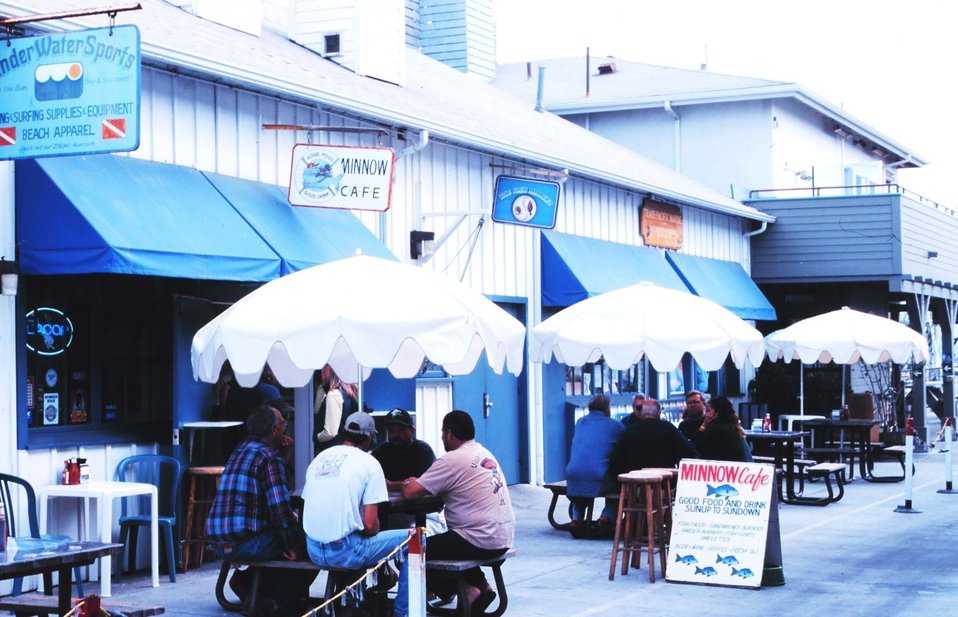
The Minnow Cafe serves fishermen and tourists